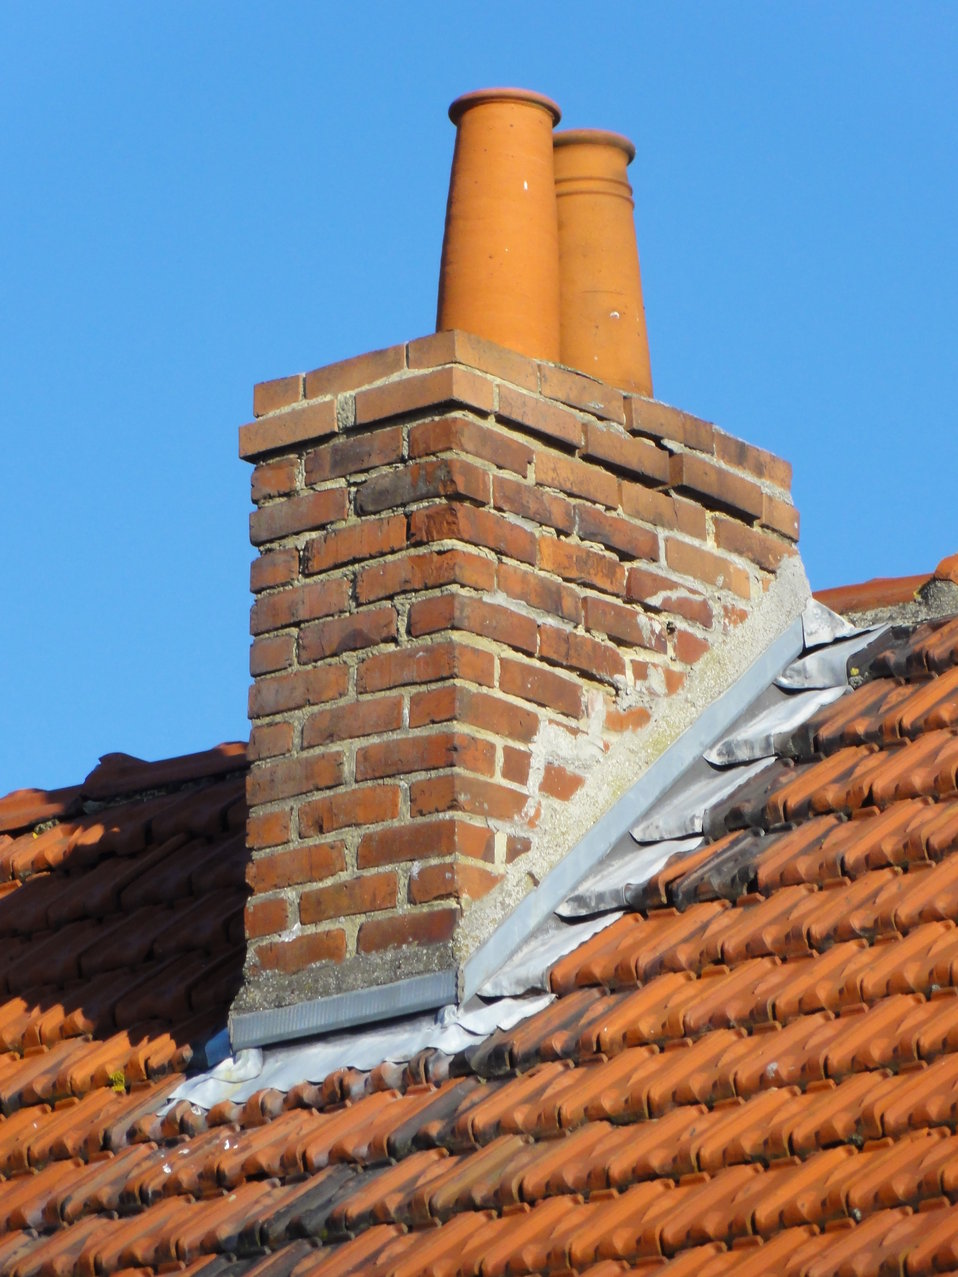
Fran√ßais†: Cit√©s de la Fosse n¬∞ 6 bis - 6 ter de la Compagnie des mines de Marles, Calonne-Ricouart, Pas-de-Calais, Nord-Pas-de-Calais, France.